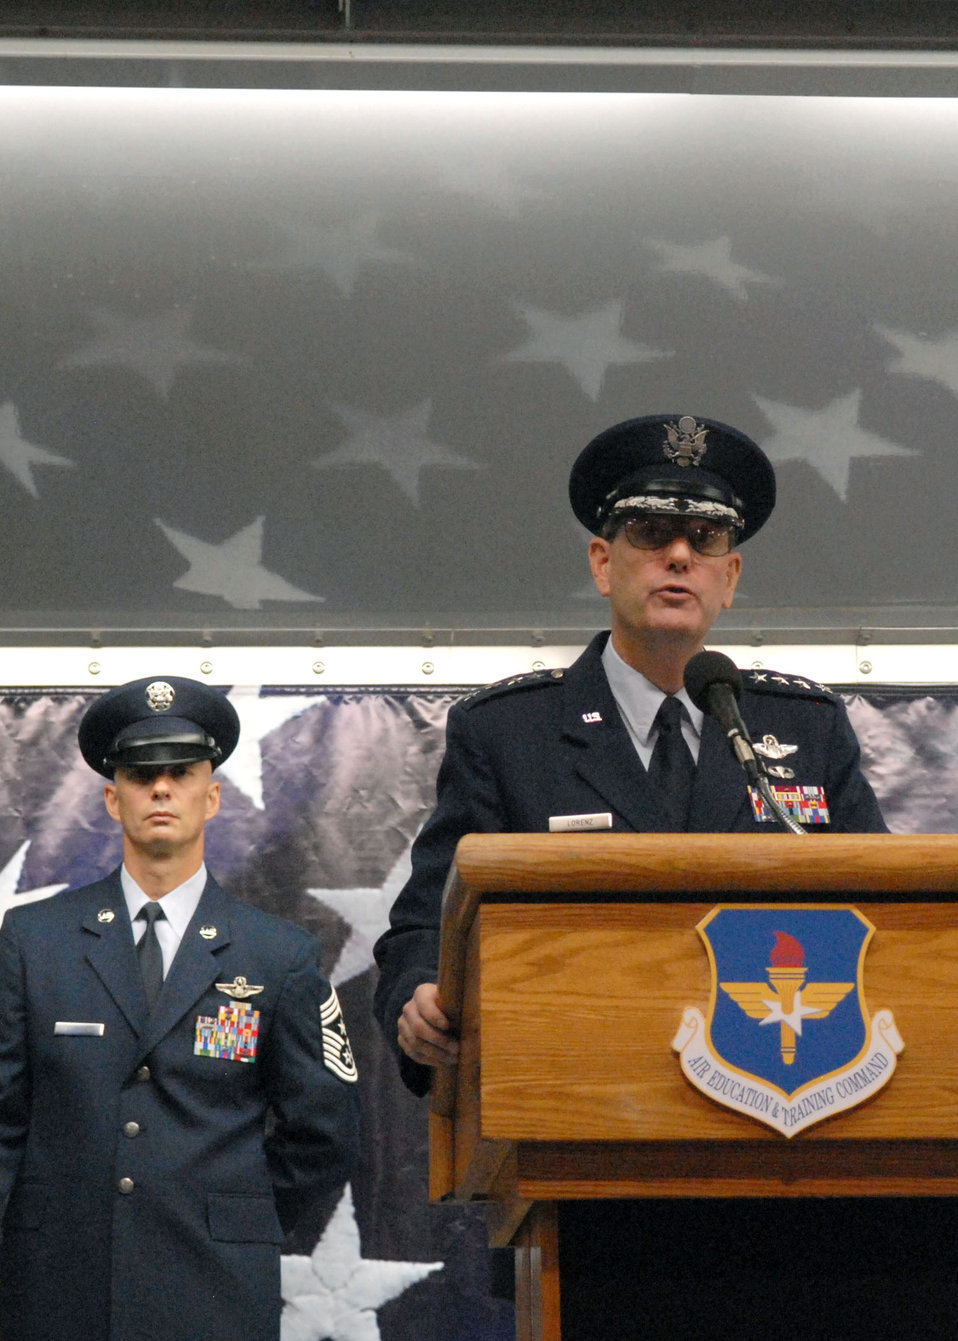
General Lorenz takes command of AETC

Gen. Stephen R. Lorenz addresses the crowd after assuming command of Air Education and Training Command July 2 at Randolph Air Force Base, Texas. He replaced Gen. William R. Looney III, who retired during the ceremony.